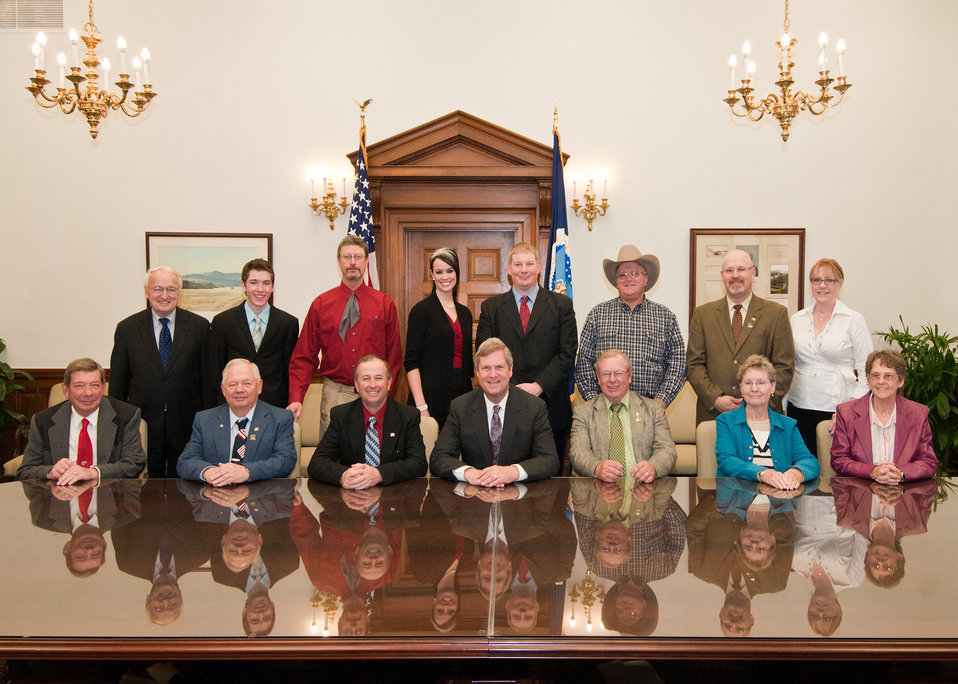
Agriculture Secretary Tom Vilsack met with members of the Colorado Farm Bureau at the United States Department of Agriculture in Washington, DC, Wednesday, March 30, 2011. From left front row: Ray Lattin, Bob Winter, Dan Shawcroft, Agriculture Secretary Tom Vilsack, Carlyle Comer, Doris Lattin Pat Denhan. From left back row: Kevin Concannon, Undersecretary, Food Nutrition and Consumers Services, Tate Bredencamp, Mike Bush, Jessica Phippen, Brent Boydston, Lanny Denham, Troy Bredenkamp, Karri Milligan.